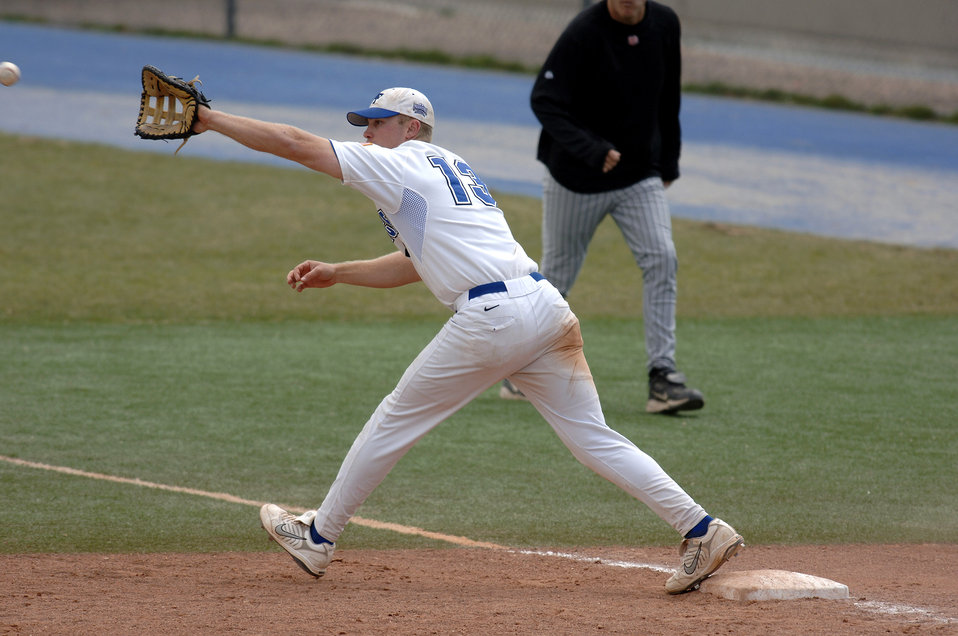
New Mexico sweeps Falcons

Senior first baseman Karl Bolt completes the infield play during the 17-8 loss to the New Mexico Lobos. New Mexico swept the 3-game series from the Air Force Falcons.